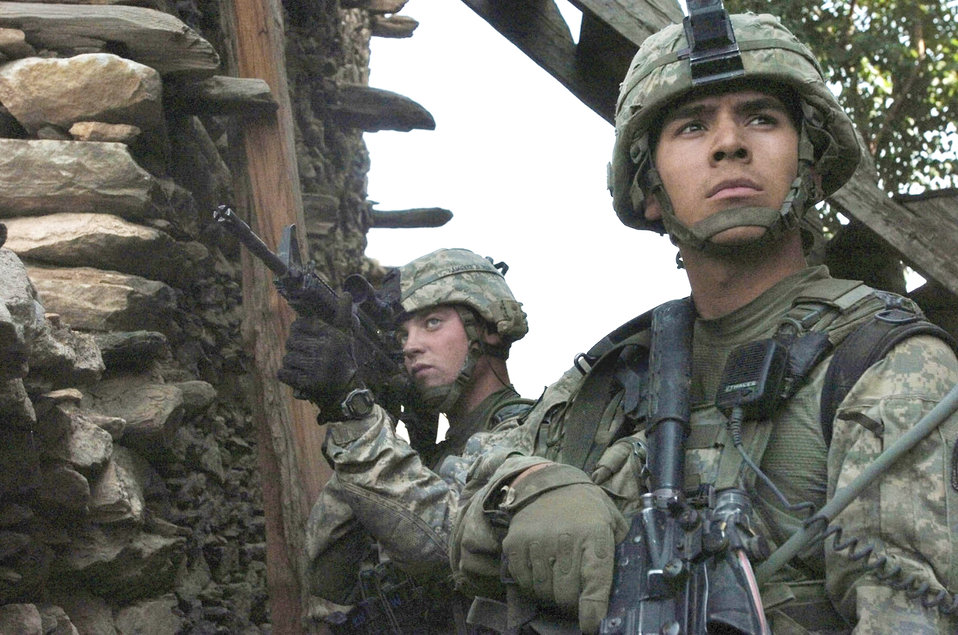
Gunfight and Airstrike in Korengal Valley

A Soldier and Airman scan the rocky hillside for insurgents Aug. 13 during an early-morning gun battle in the Korengal Valley of Afghanistan's Kunar Province. Both servicemembers are attached to Company B, 2nd Battalion, 12th Infantry Regiment, 4th Brigade Combat Team, 4th Infantry Division, based at Fort Carson, Colo. International Security Assistance Force troops across Afghanistan have increased operations in recent months, in order to ensure safety and security during Afghanistan's second national election, scheduled for the end of August.